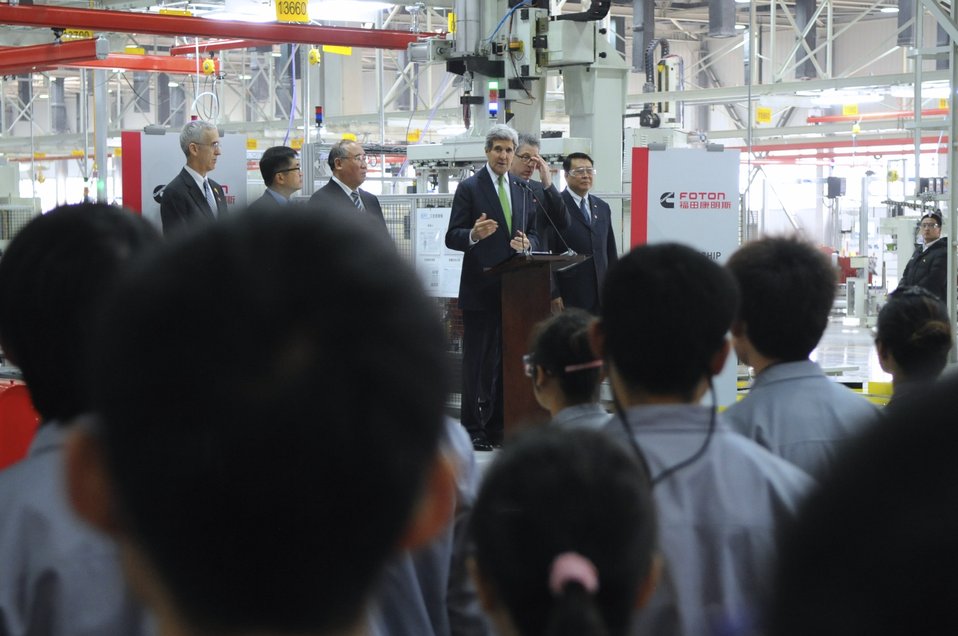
Secretary Kerry Addresses Workers at Chinese Clean-Engine Plant

U.S. Secretary of State John Kerry addresses workers at a clean-diesel engine assembly line following a tour of the Cummins-Foton Joint Venture Plant in Beijing, China on February 15, 2014.